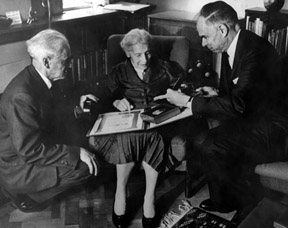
Lise Meitner receives the Fermi Award from Chairman Glenn Seaborg. Cambridge, England, 1966.